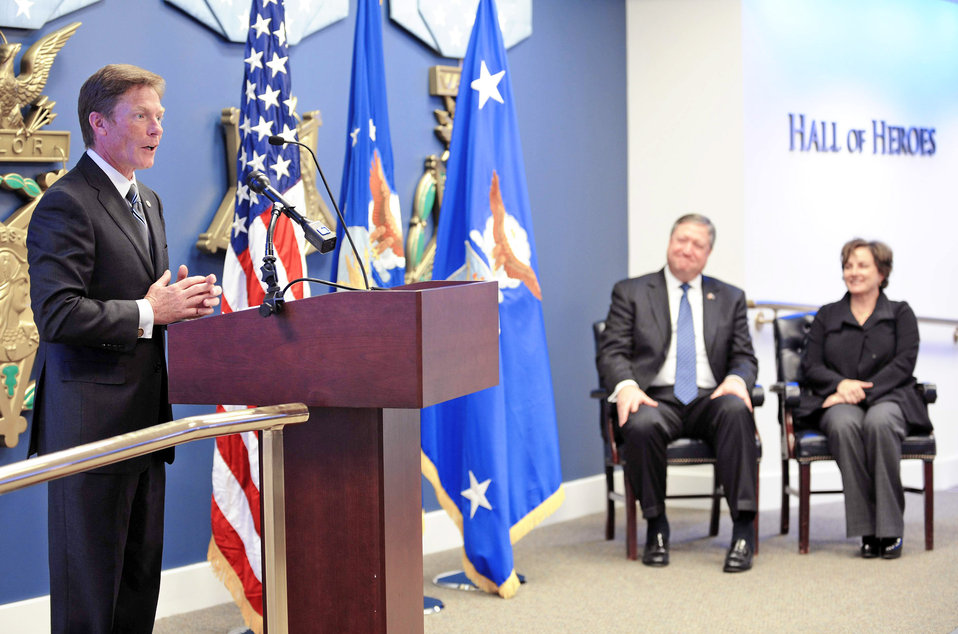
Secretary Donley announces location of newest Fisher House

Kenneth Fisher details the many accomplishments of Nancy Berglass during a ceremony to present her the Zachary and Elizabeth Fisher Distinguished Civilian Humanitarian Award at the Pentagon's Hall of Heroes Jan. 28, 2010. The multidepartmental award was established in 1996 and is presented to those exemplifying personal qualities of patriotism, generosity, and selfless dedication to improving the quality of life of members of the armed forces of the United States. Mr. Fisher is the chairman of the board of trustees for the Fisher House Foundation, Inc.